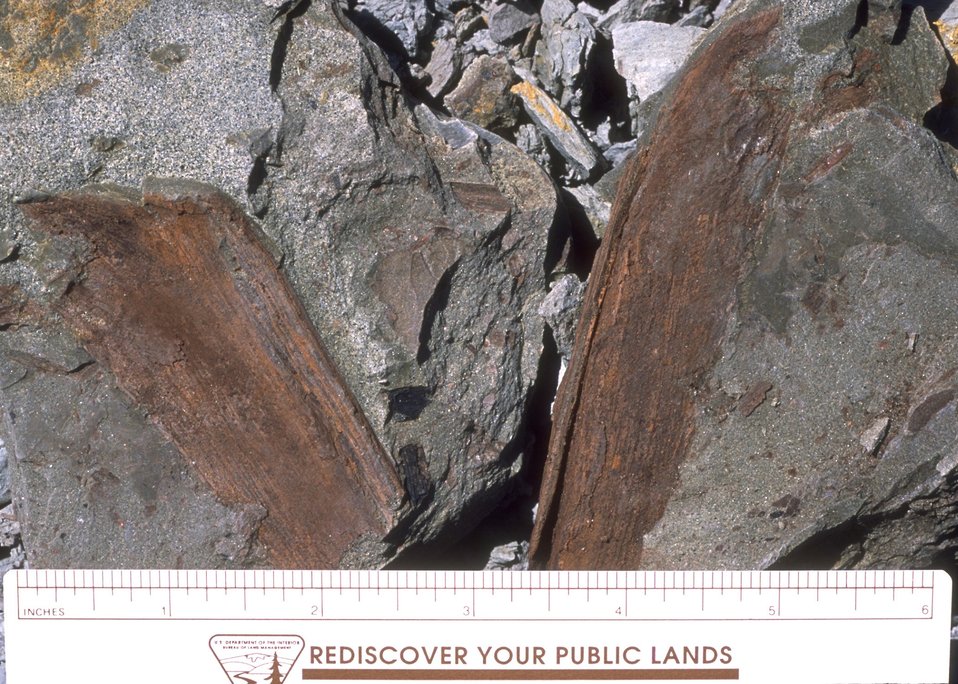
Close up of fossil vegetation, Cedar Ridge Paleo area, Worland Field Office.